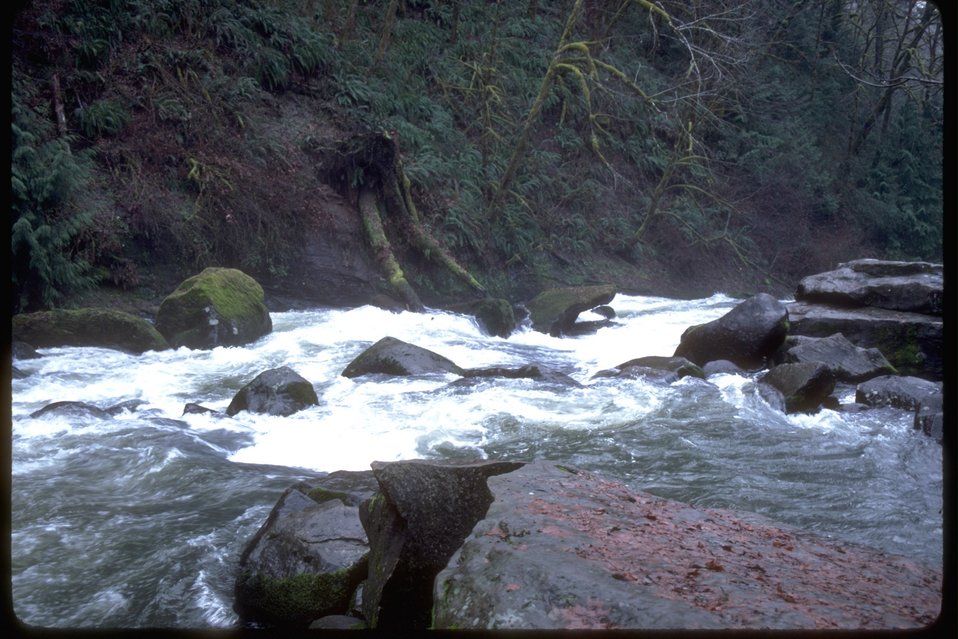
Boulders in Lake Creek.